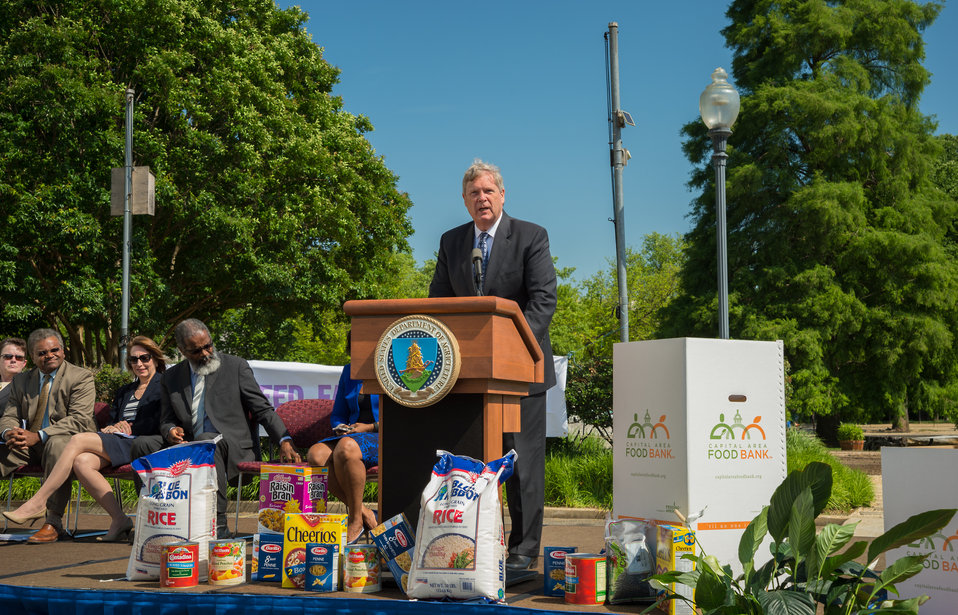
Agriculture Secretary Tom Vilsack announced the 2014 National Feds Feed Families Kick-Off at the United States Department of Agriculture’s (USDA) People’s Garden in Washington, DC, Mon. Jun. 2, 2014. The theme of this year’s event is, “Help Knock Out Hunger.” The USDA will lead the campaign with the support of the Chief, Human Capital Officers Council and other agency partners, which officially begins on June 1 and will run through August 27, 2014. On stage behind Secretary Vilsack are Dr. Gregory Parham, Assistant Secretary for Administration and Karen Comfort, National Program Manager, Feds Feed Families.